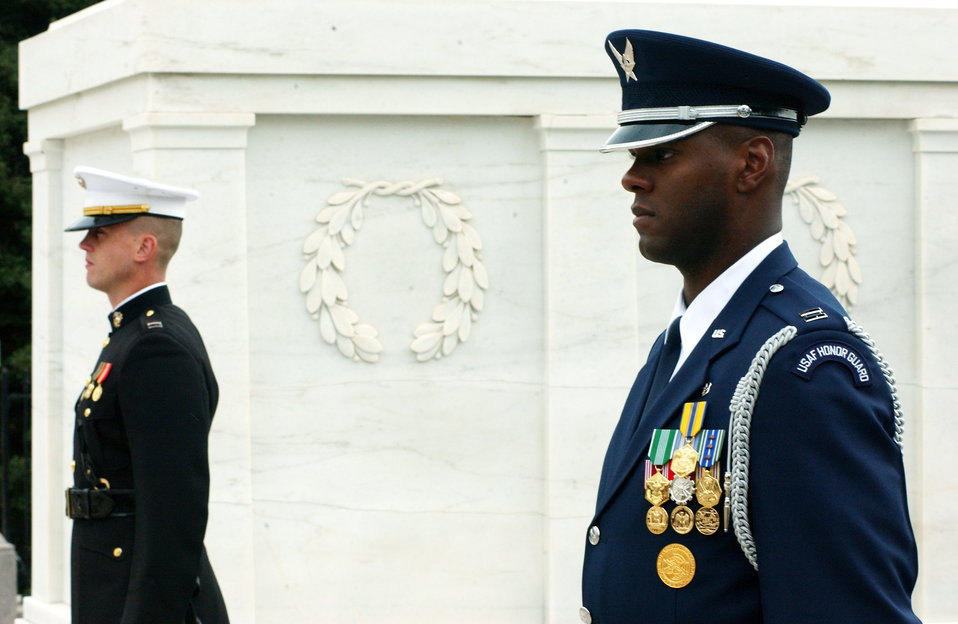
Veterans Day

ARLINGTON, Va. -- Capt. Jamale Hart stands at attention in front of the Tomb of the Unknowns at Arlington National Cemetery on Nov. 11. Hart and other U.S. Air Force Honor Guard airmen participated in the Veterans Day wreath-laying ceremony.